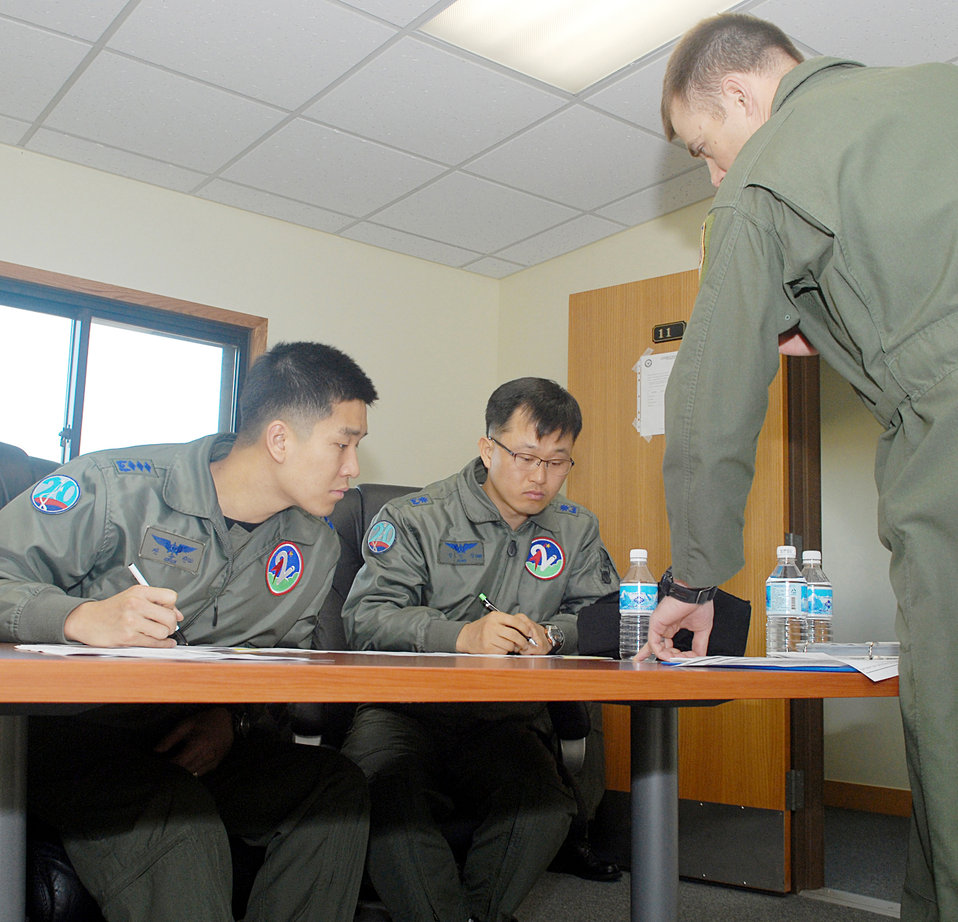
Kunsan Airmen train with South Korean fighter pilots

Maj. Crispin Kretzmann goes over the flight plan with South Korea air force Capt. Sung Jin Jeon and South Korea air force Maj. In Chang Jung during an exercise March 16, 2010, at Kunsan Air Base, South Korea. The exercise places U.S. and South Korea air force pilots together for several realistic aerial exercises to familiarize with each other's tactics and procedures. Major Kretzmann is assigned to the 391st Expeditionary Fighter Squadron. Captain Jeon and Major Chang are assigned to the 21st Fighter Squadron.